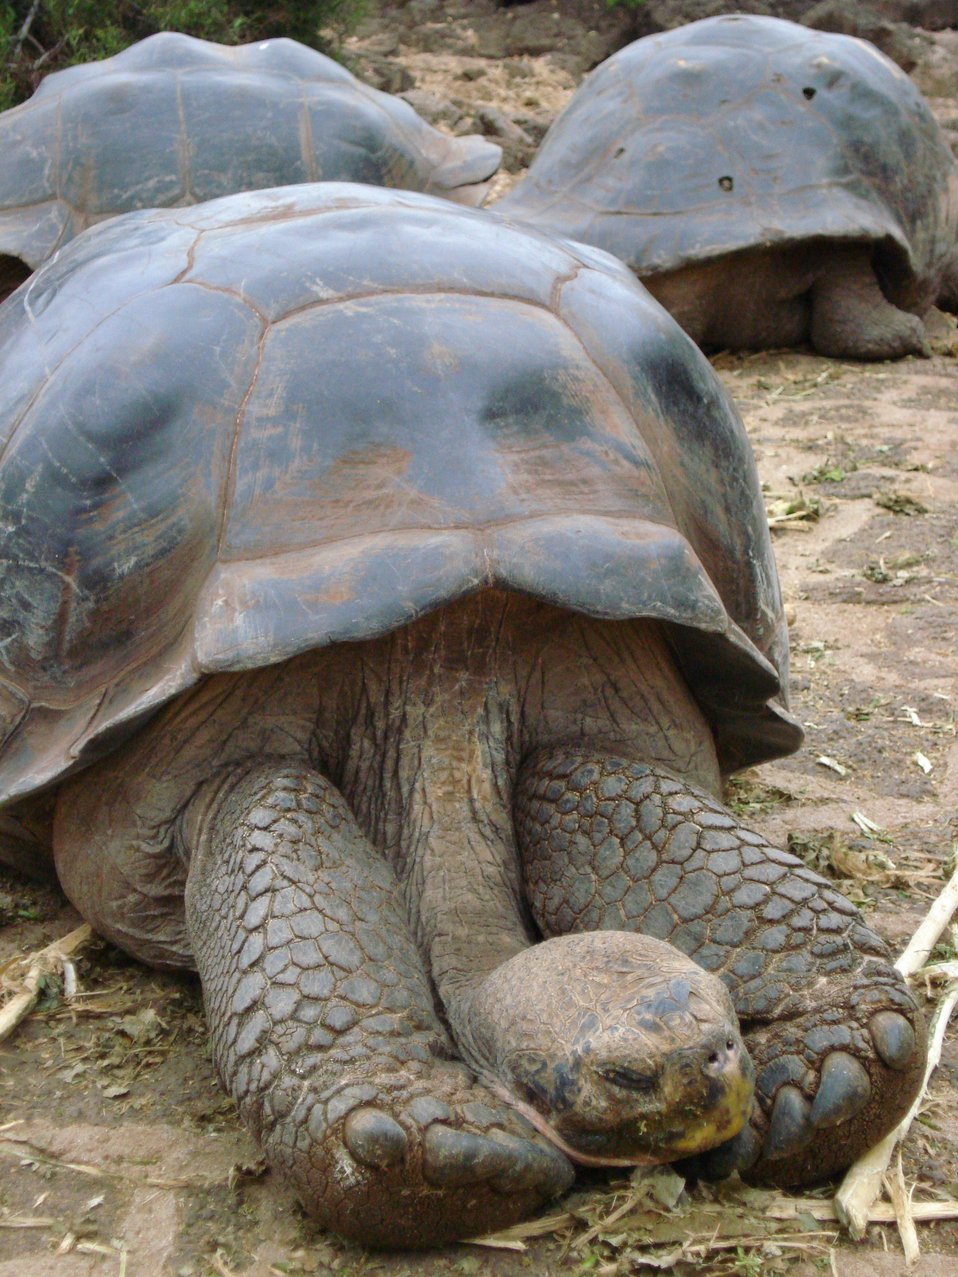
Galapagos Tortoise displaying long serpentine neck.